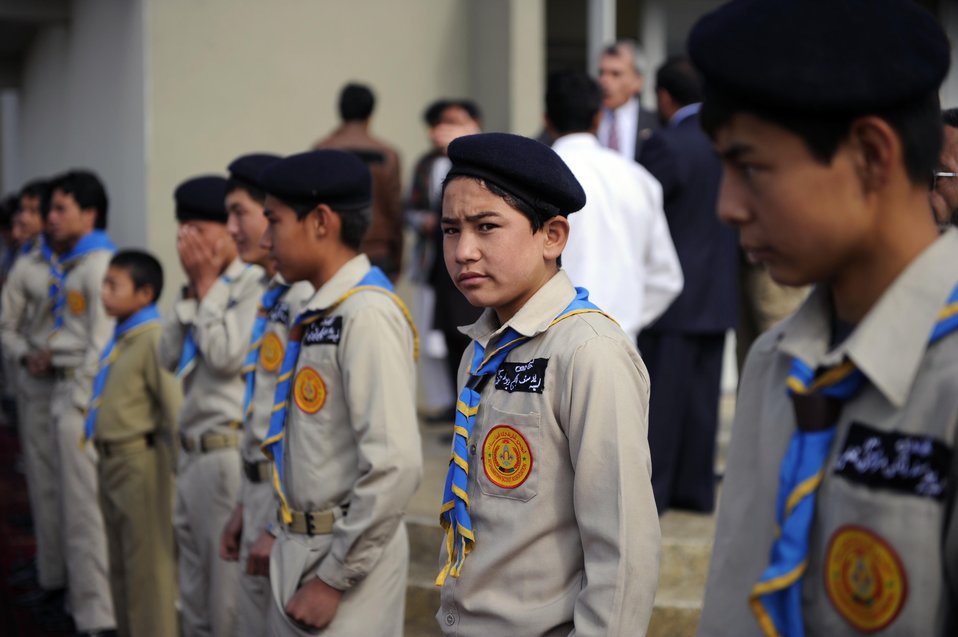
Participants in the Ghazi School inauguration wait to welcome arriving guests.

U.S. Deputy Ambassador to Afghanistan James B. Cunningham, Afghan Minister of Education Abdul Rahim Wardak and visitng former U.S. Ambassador to Afghanistan Zalmai Khalilzad officially inaugurated the newly rebuilt Ghazi High School in West Kabul October 23, 2011. Former alumni of the school include both Ambassador Khalilzad and Afghan President Hamid Karzai. The school was destroyed during 30 years of fighting in Afghanistan, and was refurbished by the U.S. Agency for International Development. (Department of State)